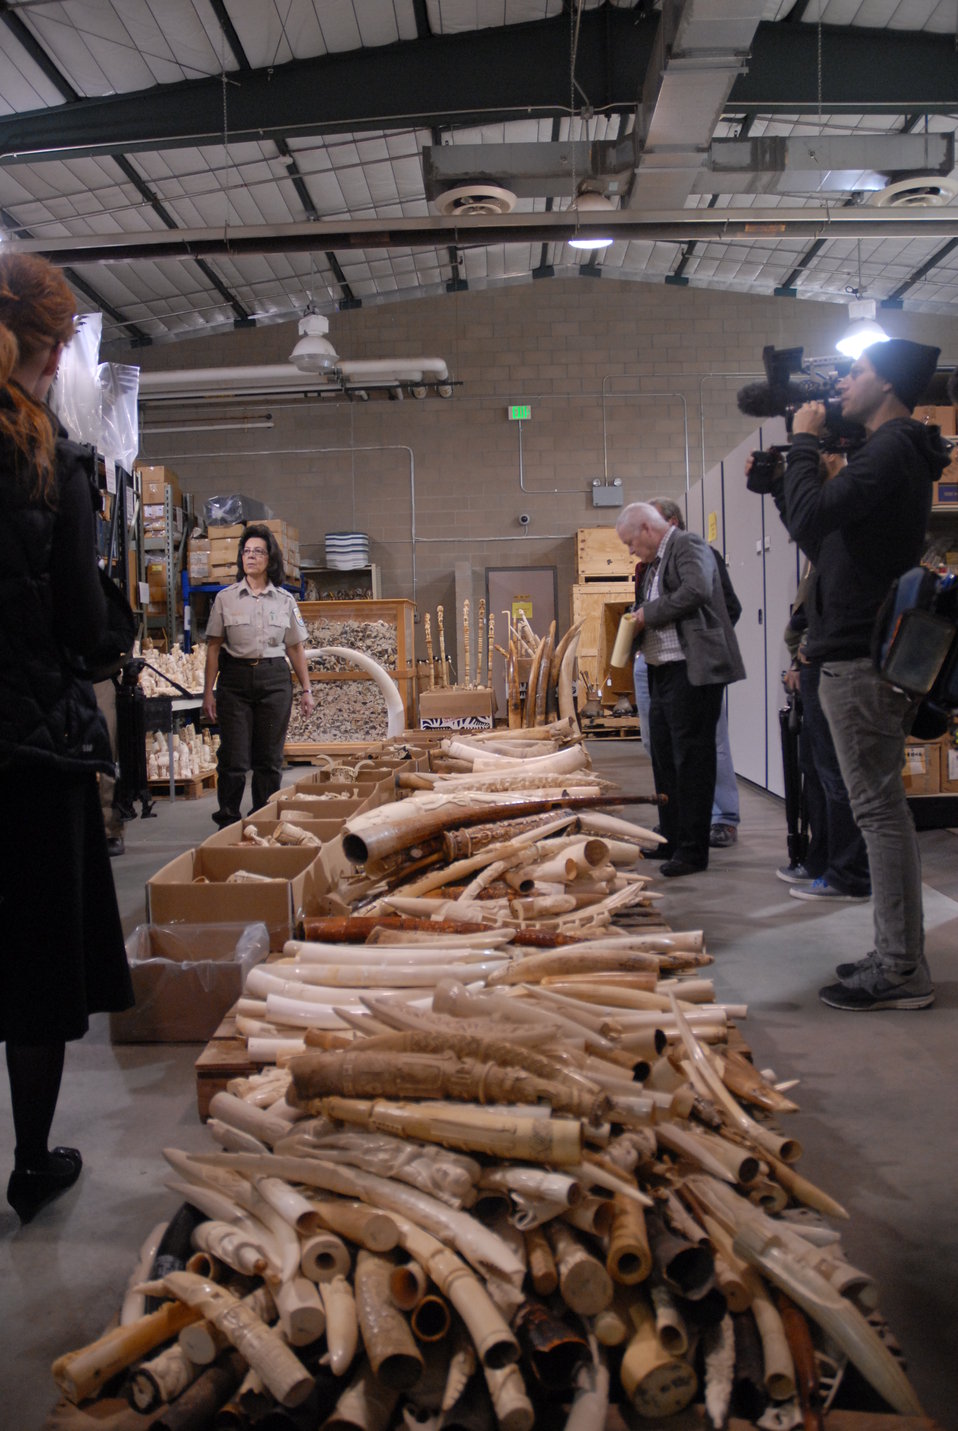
Ivory stockpile slated for destruction in the crush.